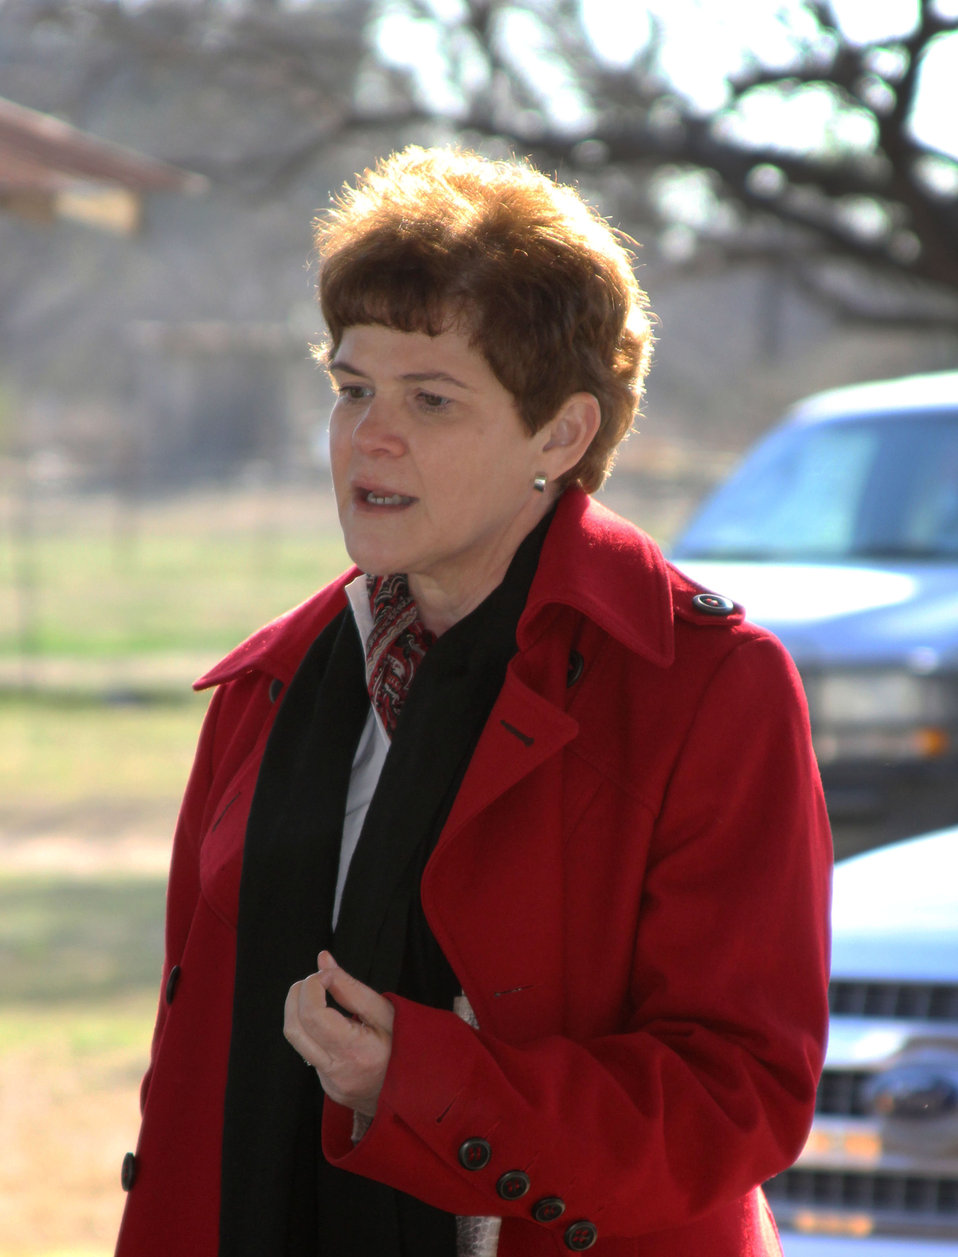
Agriculture Deputy Secretary Krysta Harden visits with South Texas farmers and ranchers about Strikeforce at Miguel Ruiz’s ranch in Lytle, TX on Thursday, Feb. 27, 2014.